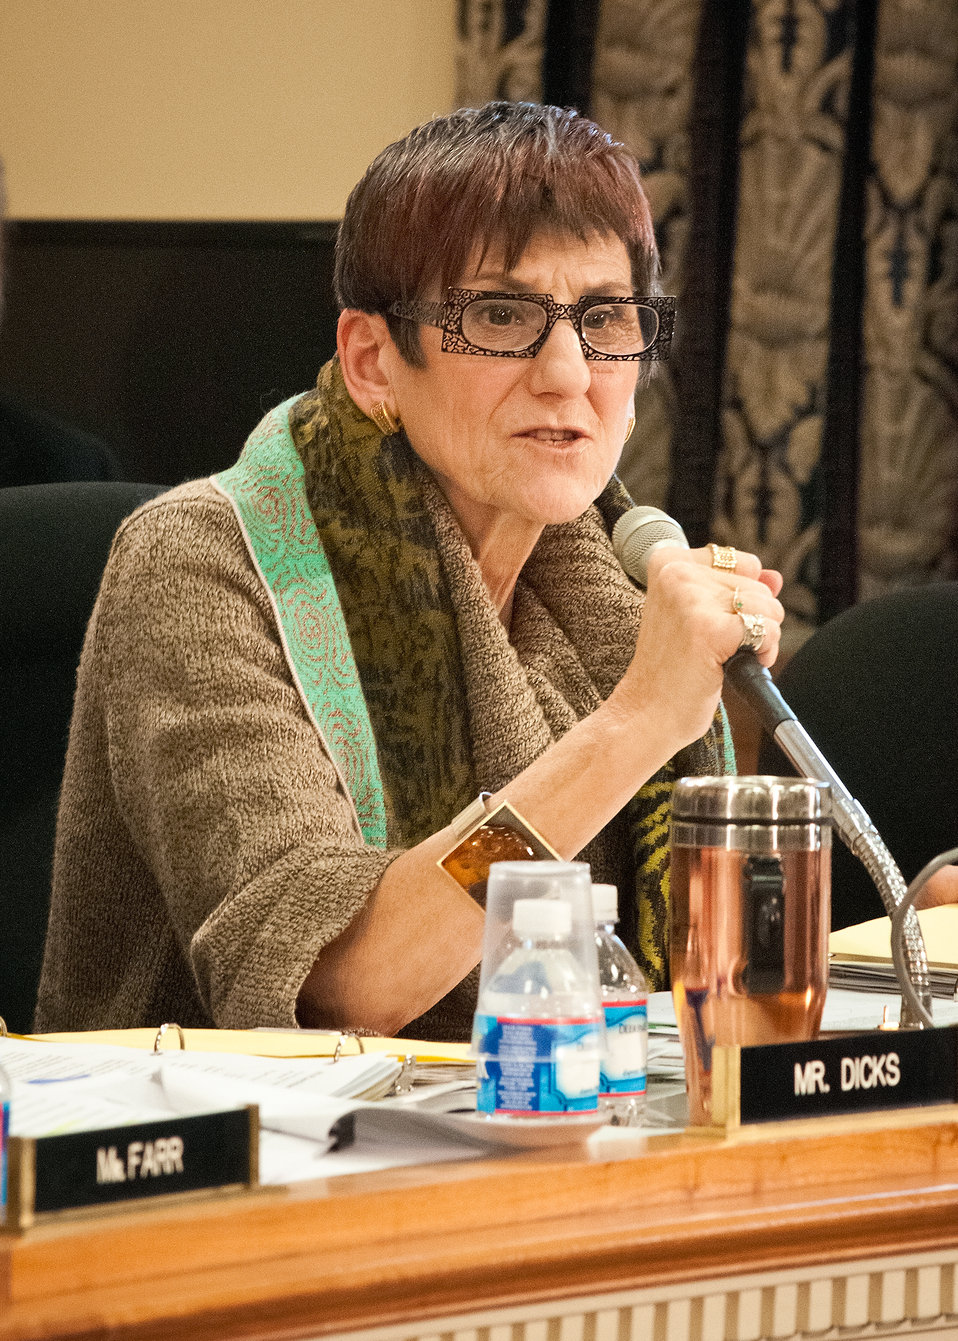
Congresswoman Rosa DeLauro, Connecticut a member and past chairman of the House Agriculture Appropriations Committee asked Agriculture Secretary Tom Vilsack about nutrition programs during a House Agriculture Appropriations Committee meeting to discuss the United States Department of Agriculture budget in the Rayburn House Office Building on Friday, February 17, 2012 in Washington, D.C.